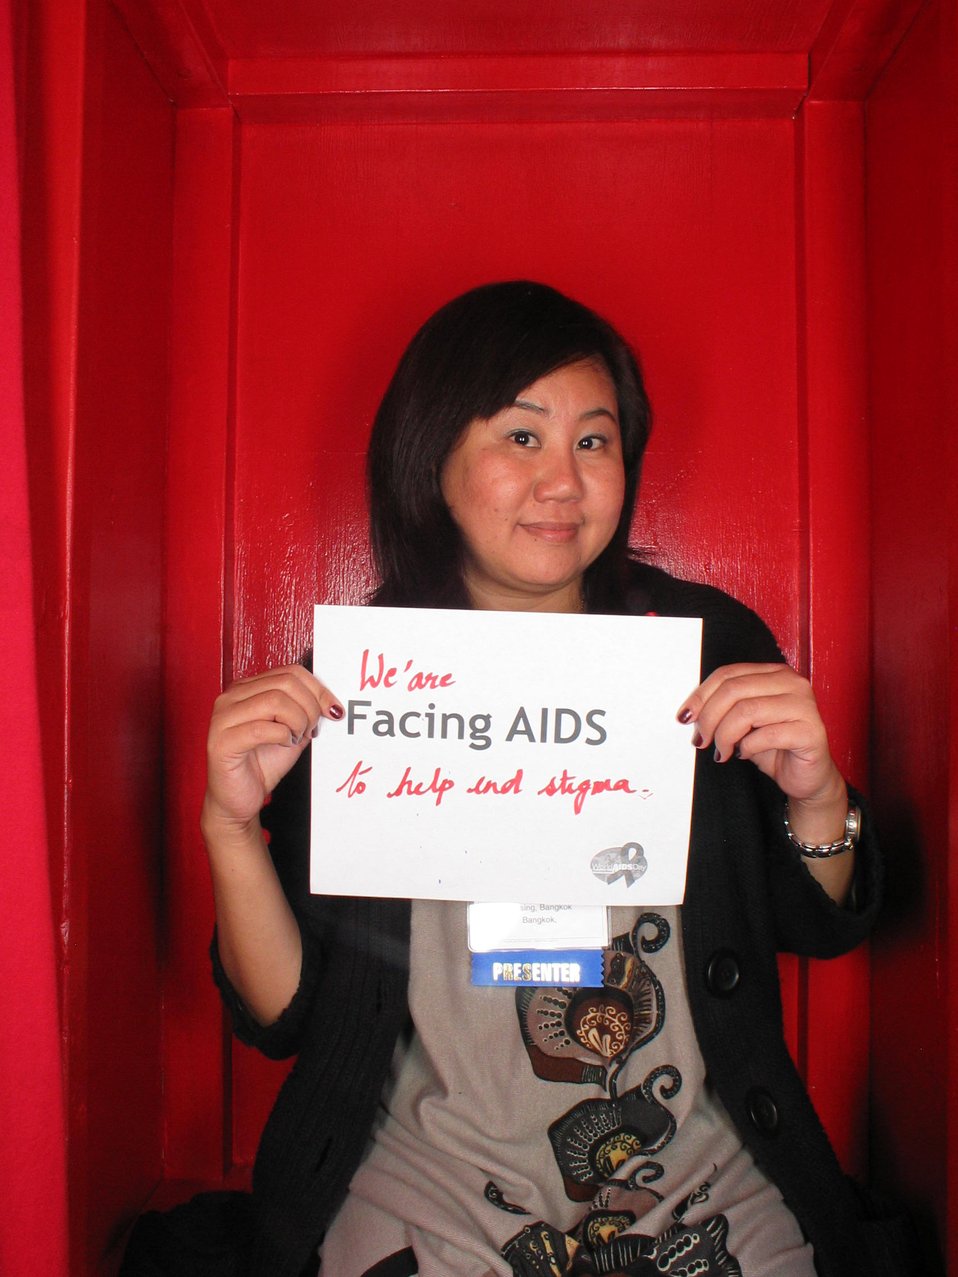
We're Facing AIDS to help end stigma.